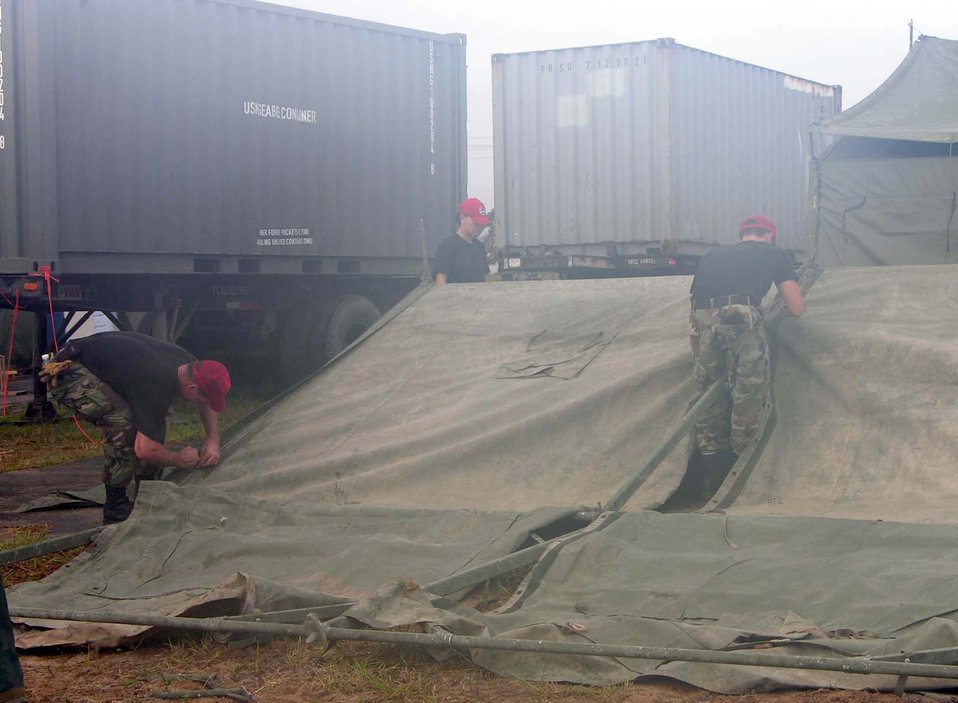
New horizons in Guyana

CAMP STEPHENSON, Guyana -- Airmen from the 820th Red Horse Squadron at Nellis Air Force Base, Nev., construct tents here June 11 during exercise New Horizons 2004-Guyana. About 200 U.S. Airmen, Soldiers and Sailors are participating in the joint training exercise co-sponsored by the U.S. Southern Command and the Guyana defense force. A combined team of engineers and medics are working on construction projects and medical-training activities.